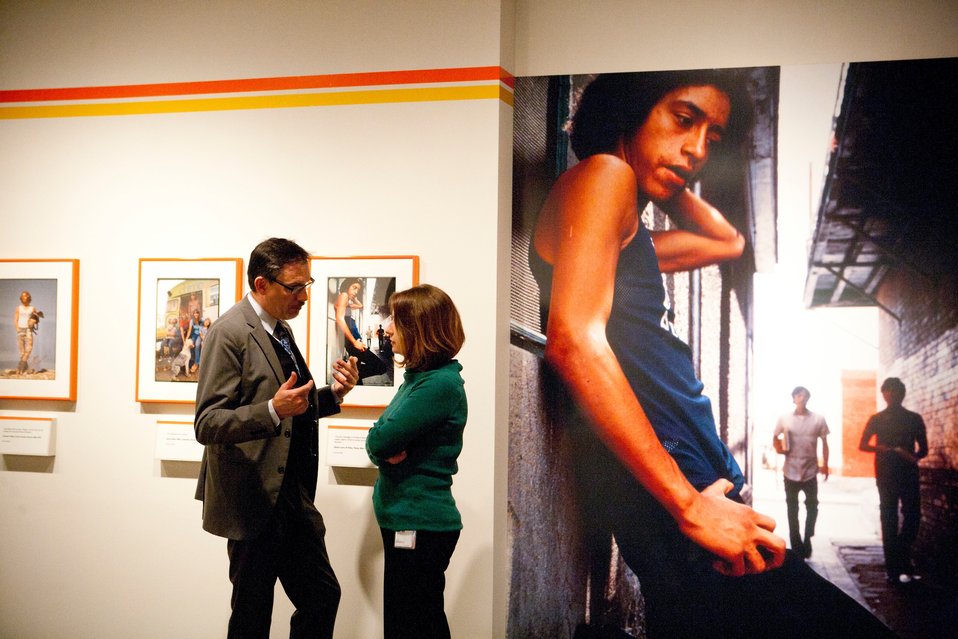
Foundation members Franck Cordes and Kristine Inchausti visiting in the Documerica exhibit; Location: Archives 1 - Lawrence F. O'Brien Gallery, Washington, D.C.